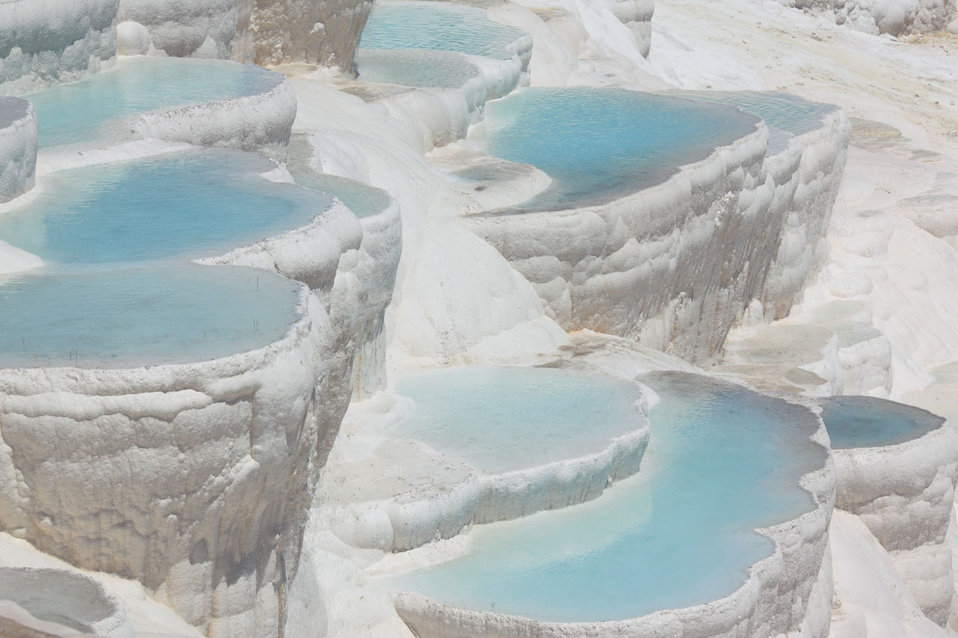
Pamukkale terraces

Famous pamukkale travertine in turkey.